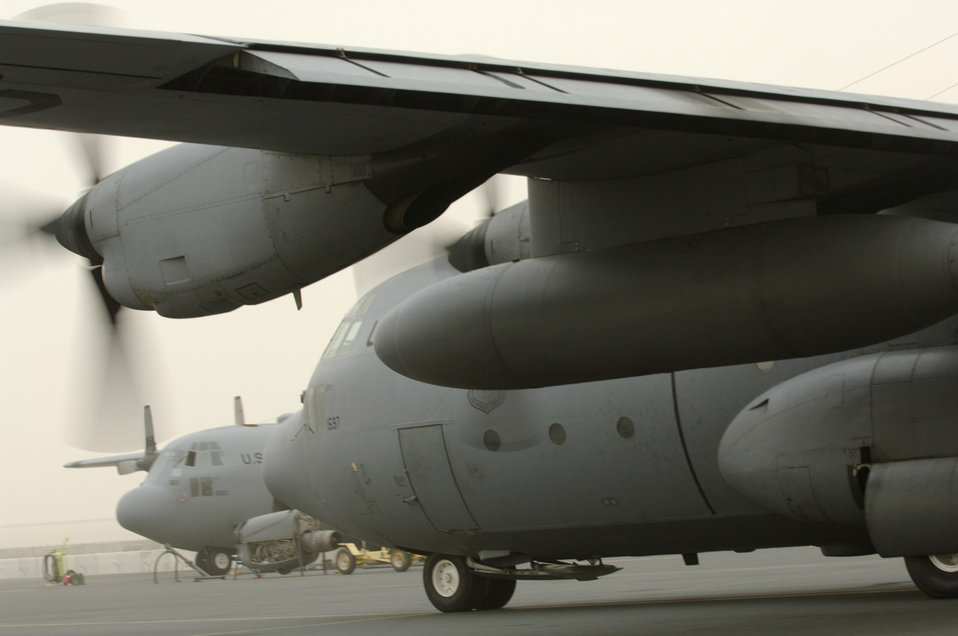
April 30 airpower summary: C-130s sustain war effort

A C-130 Hercules prepares for takeoff at an air base in Southwest Asia in support of operations in Iraq. The flexible design of the C-130 enables it to be configured for many different missions, allowing for one aircraft to perform the role of many. Much of the special mission equipment added to the C-130 is removable, allowing the aircraft to revert back to its cargo delivery role if desired.